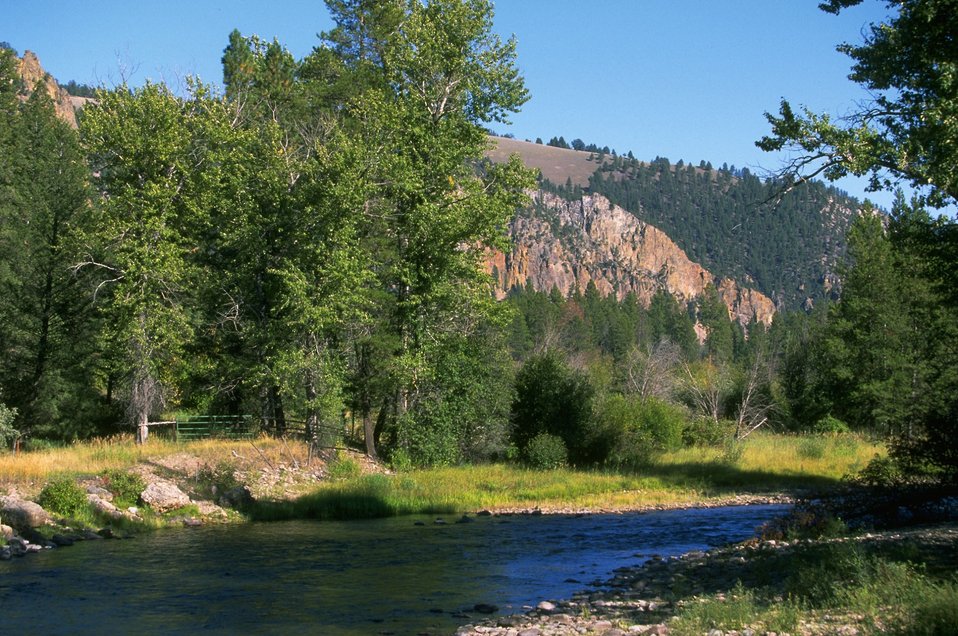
Rock Creek near Squaw Rock ACEC (area of critical environmental concern)